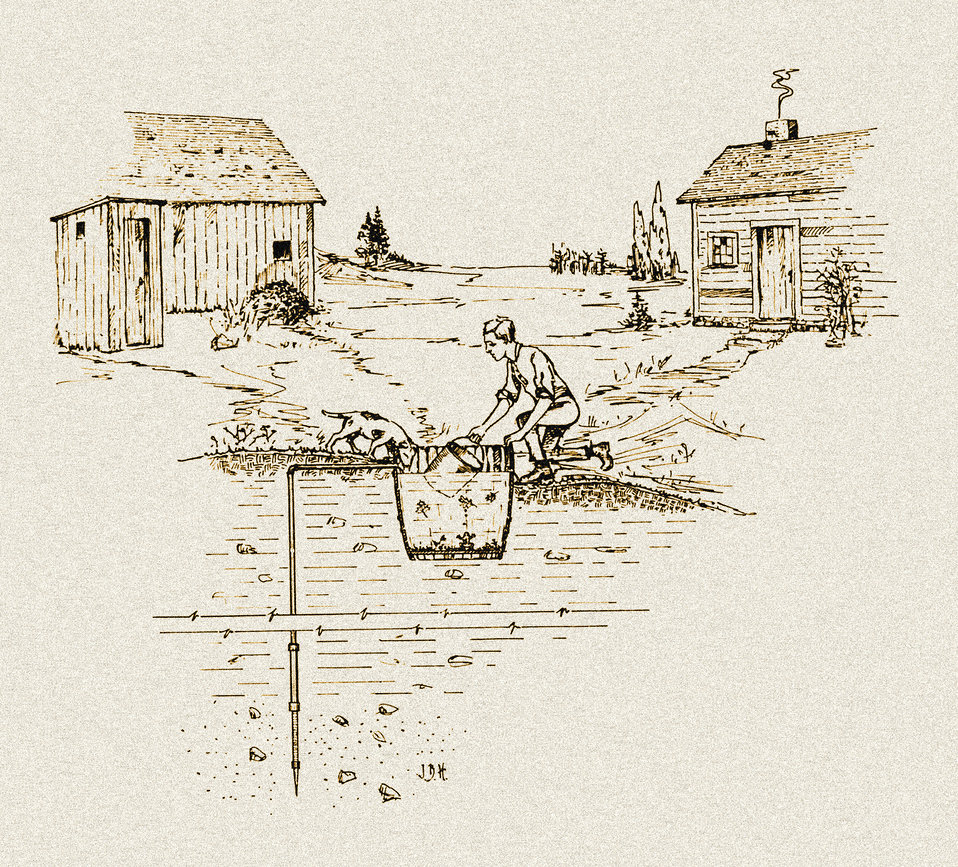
This historic diagram, which had been digitally enhanced and colorized, depicted a cross-sectional representation of an improperly constructed 'flowing' well that was being used as a farm's potable water supply.Note that the privy and the barn have both been built uphill from the well. This increased the chances for contamination from liquid waste traveling downhill from these structures. The water supply is also accessible to animals, which also increased the chances of contamination. By dipping a receptacle into the well in order to retrieve water, the farmer is also contributing to the chances that the water supply could become contaminated.